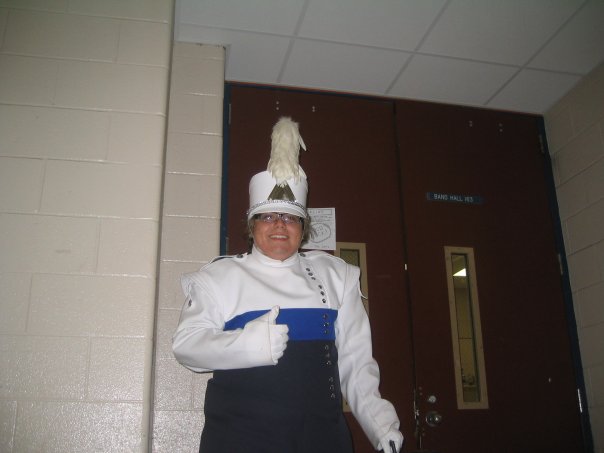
Template:Photo of a person in a uniform standing in front of a door